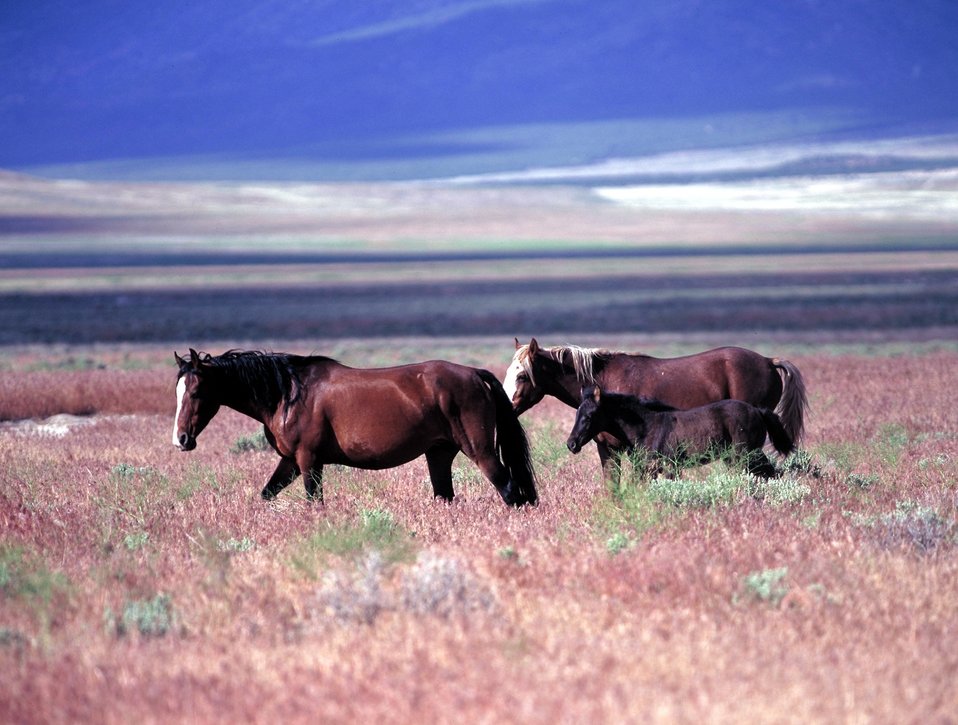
Onaqui Herd near Dugway, Utah.